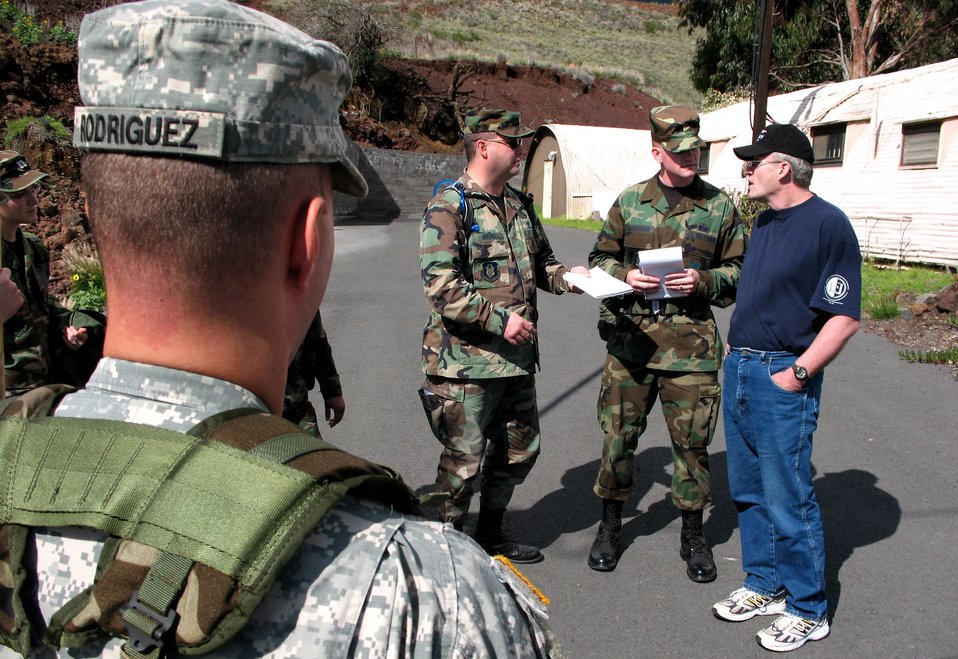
PACAF legal teams train to deploy

Army Capt. Bernal Rodriguez, a lawyer with U.S. Army Pacific legal office, observes as Maj. Peter Meyers, a lawyer, and Tech. Sgt. Lee Feldhausen, a paralegal, both from the Air Force Reserve Command, negotiate a situation Dec. 10 with a simulated non-governmental official, played by Canadian Army Maj. Warren Fensen. The Airmen and Soldiers are four of 24 military members deployed to the island of Hawaii's Pohakuloa Training Area for the Pacific Air Forces' PACJOLE, or Pacific Joint Operations Legal Exercise, which runs from Dec. 9 to 14.